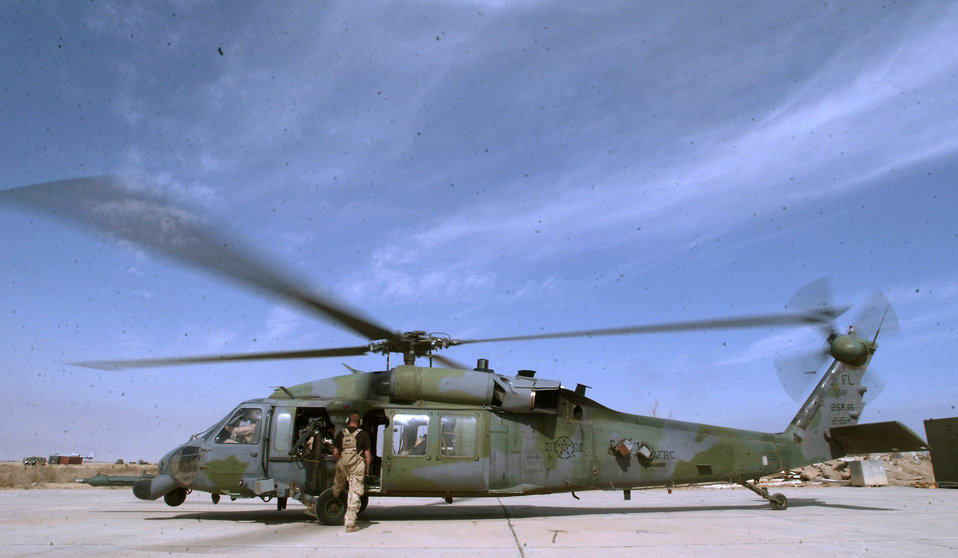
Ready to go

OPERATION IRAQI FREEDOM -- An HH-60G Pave Hawk helicopter from the 301st Rescue Squadron gets ready to lift off on a mission from a forward deployed location in southern Iraq.